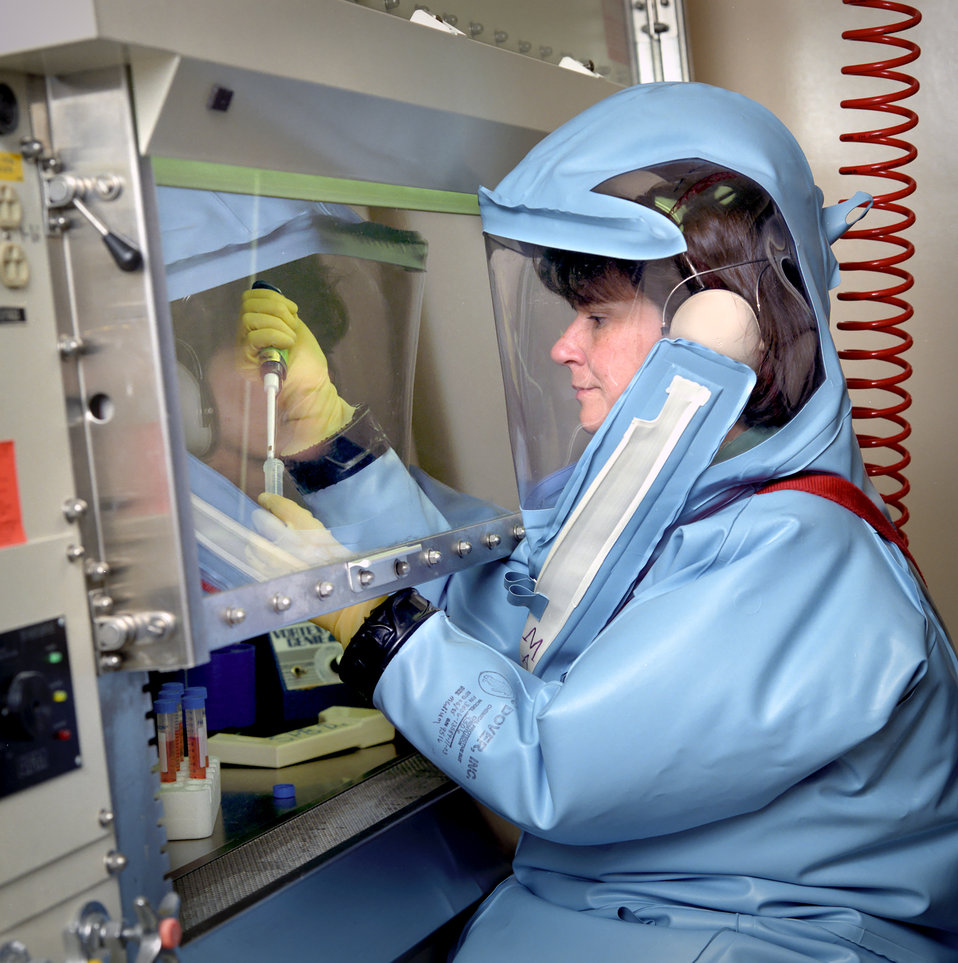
This photograph showed a CDC scientist as she was in the process of pipetting specimens in one of the Center for Disease Control's (CDC) Biosafety Level-4 (BSL-4) laboratories, located in Atlanta, GA. The scientist was wearing a protective air-tight suit equipped with a helmet and face mask. She was seated at a negatively-pressurized laminar flow hood that allowed no air flow to escape back into the lab environment. Using this negatively pressurized, hooded environment any airborne pathogens, or toxic vapors are drawn back into the hooded container, and up into a filtered ventilation system, thereby, avoiding the spread of contaminants through the laboratory.